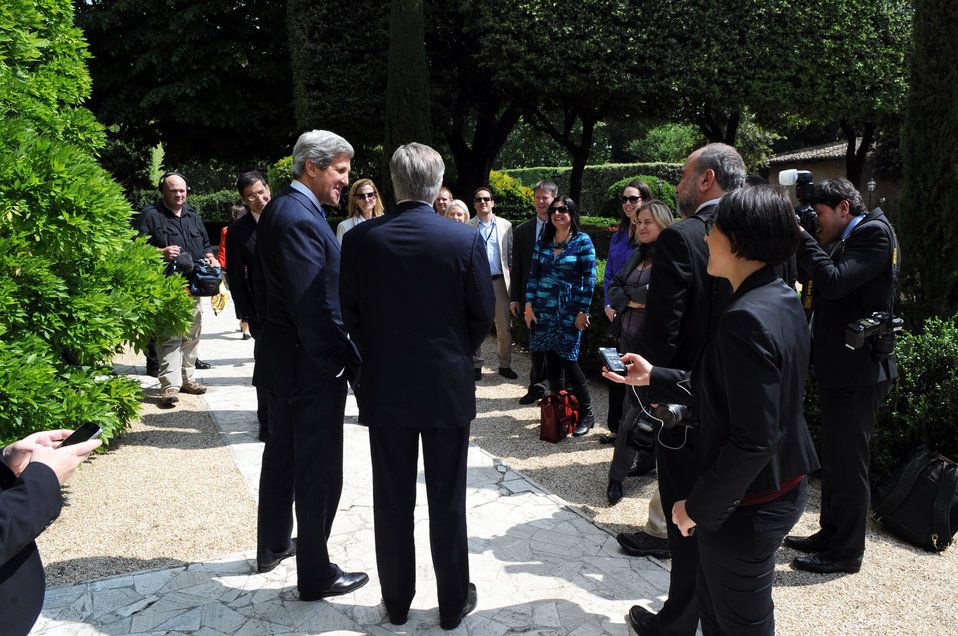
Secretary Kerry and Ambassador Thorne Speak with the Traveling Press Corps

U.S. Secretary of State John Kerry and U.S. Ambassador to Rome David Thorne spend time with the Secretary's traveling press corps at the U.S. ambassador's residence, the Villa Taverna, in Rome, Italy, on May 8, 2013.